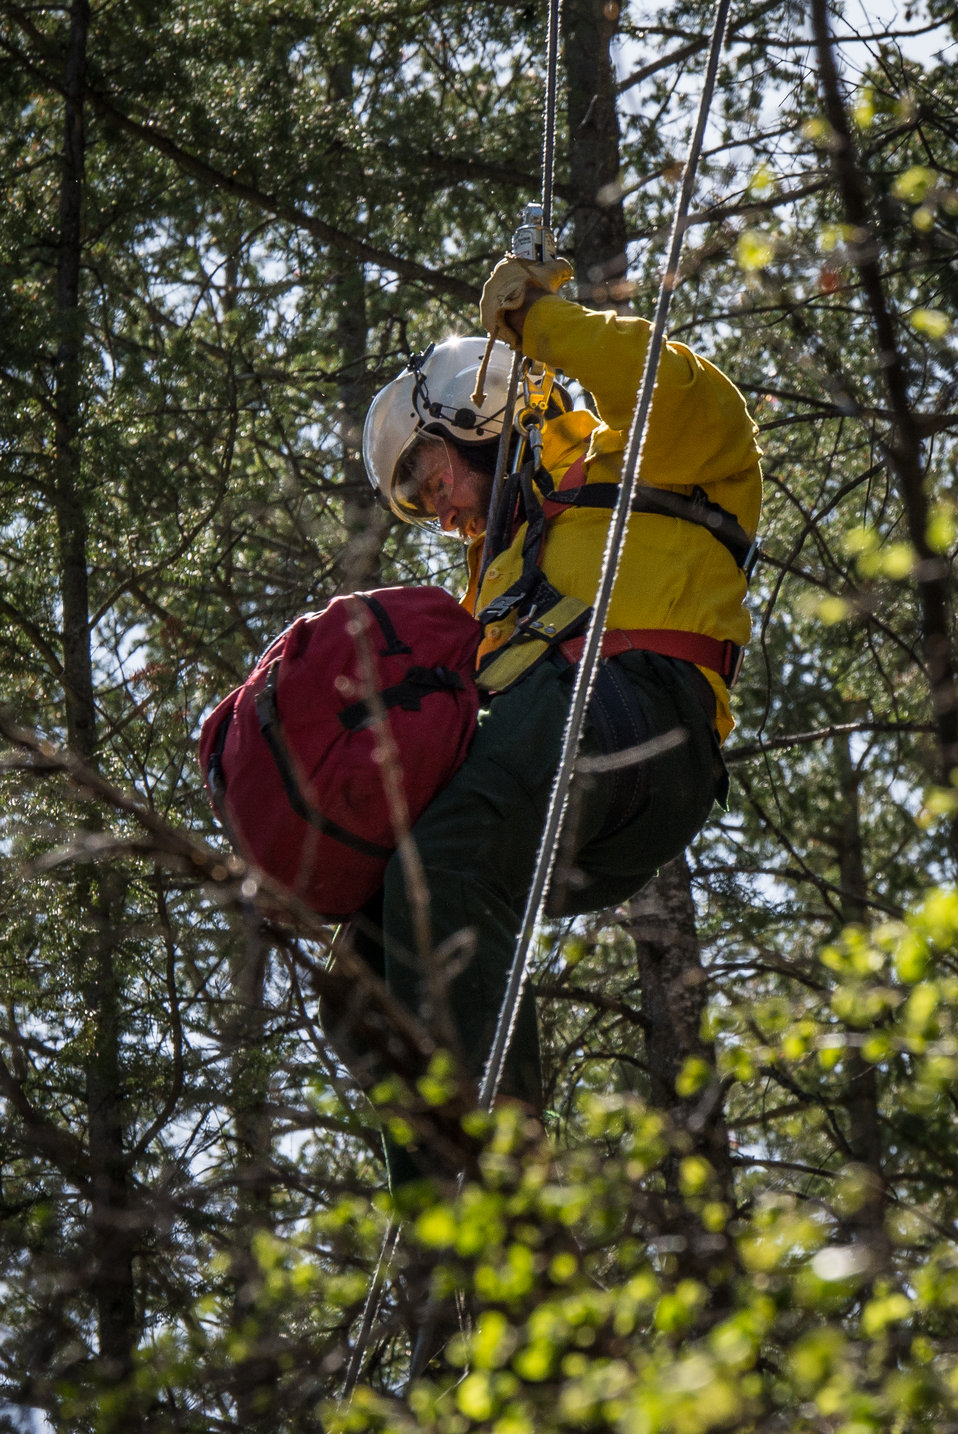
Veteran wildland firefighter rappellers use various techniques to negotiate the wind from the helicopter rotor blades above them, and away from tree branches, beside and below, as they perform a controlled and safe descent at the U.S. Department of Agriculture (USDA) U.S. Forest Service (USFS) National Helicopter Rappel Program’s Rappel Academy at Salmon Air Base in Salmon, ID on Thursday, May 15, 2014. From May 12, 2014, 72 veteran rappellers from all over the nation, 30 support staff, and three helicopters with flight crews attend the training at Salmon Air Base. Participants will rappel into the Perreau Creek area. The annual training is delivered in accordance with the National Rappel Operations Guide; strengthen leadership, teamwork, and communications within the rappel community, and produces quality aerial delivered firefighters for use in fire and aviation operations. The USDA Forest Service National Helicopter Rappel Program’s primary mission is initial attack. Rappel crews may be utilized for large fire support, all hazard incident operations, and resource management objectives.